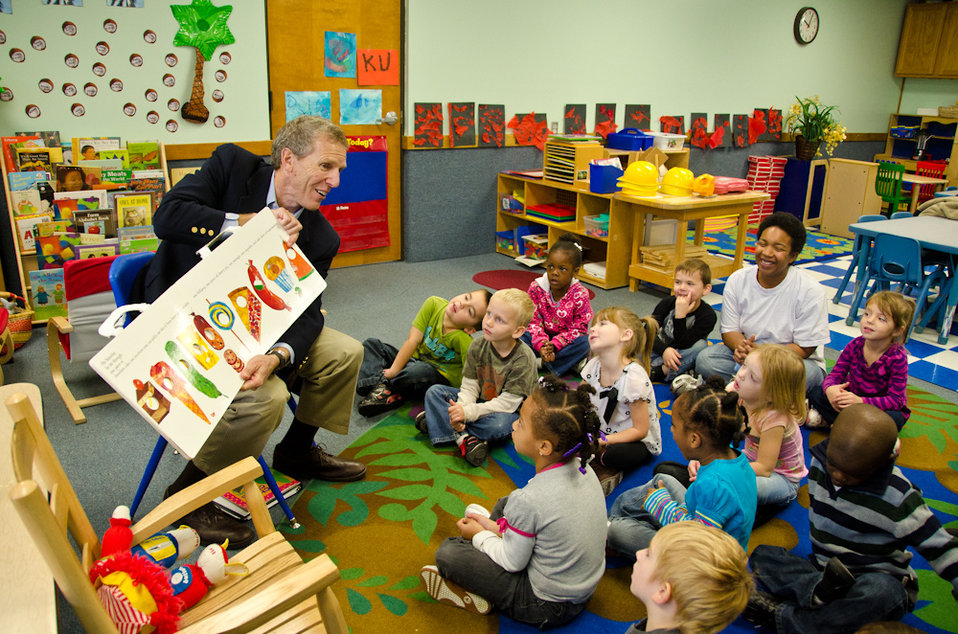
November 16, 2011 Name that book!

If you have kids, you probably have a slight advantage... EPA Regional Administrator Karl Brooks enjoyed his time reading to young children during 'Kansas Reads to Preschoolers Week.'

Learn more @ bit.ly/vCUtOW